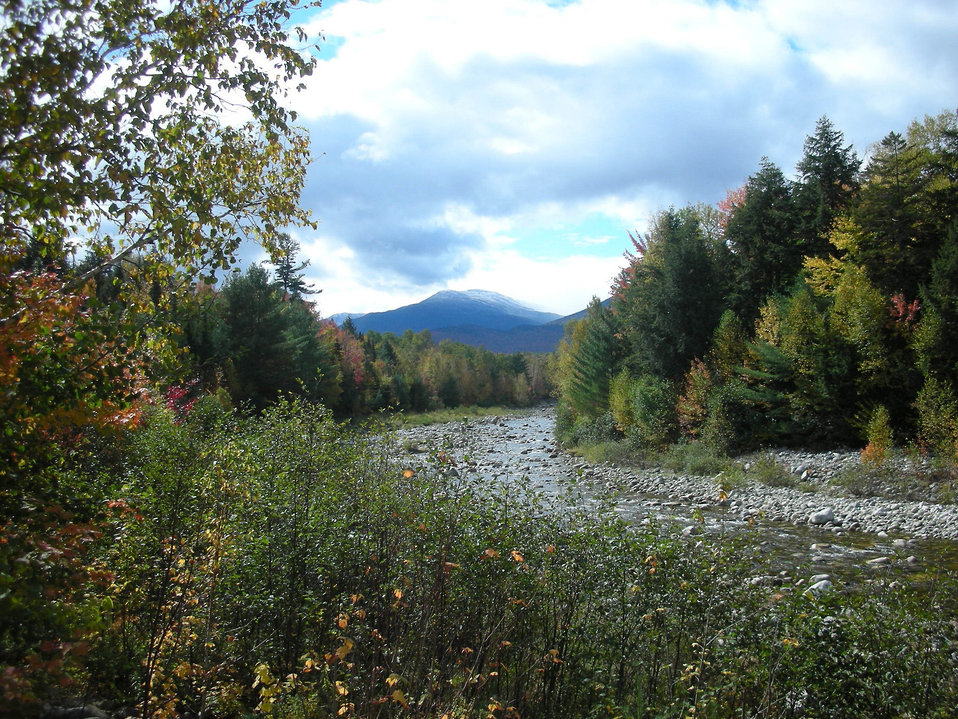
Fall Colors at Mt. Washington, in the White Mountains National Forest, NH. The U.S. Forest Service (FS) has a Forest Service 2012 Fall Colors Website and a toll-free Fall Colors Hotline at 1-800-354-4595 that will help visitors plan their trip to catch the colors at their peaks.USDA photo by J. Knowlton.